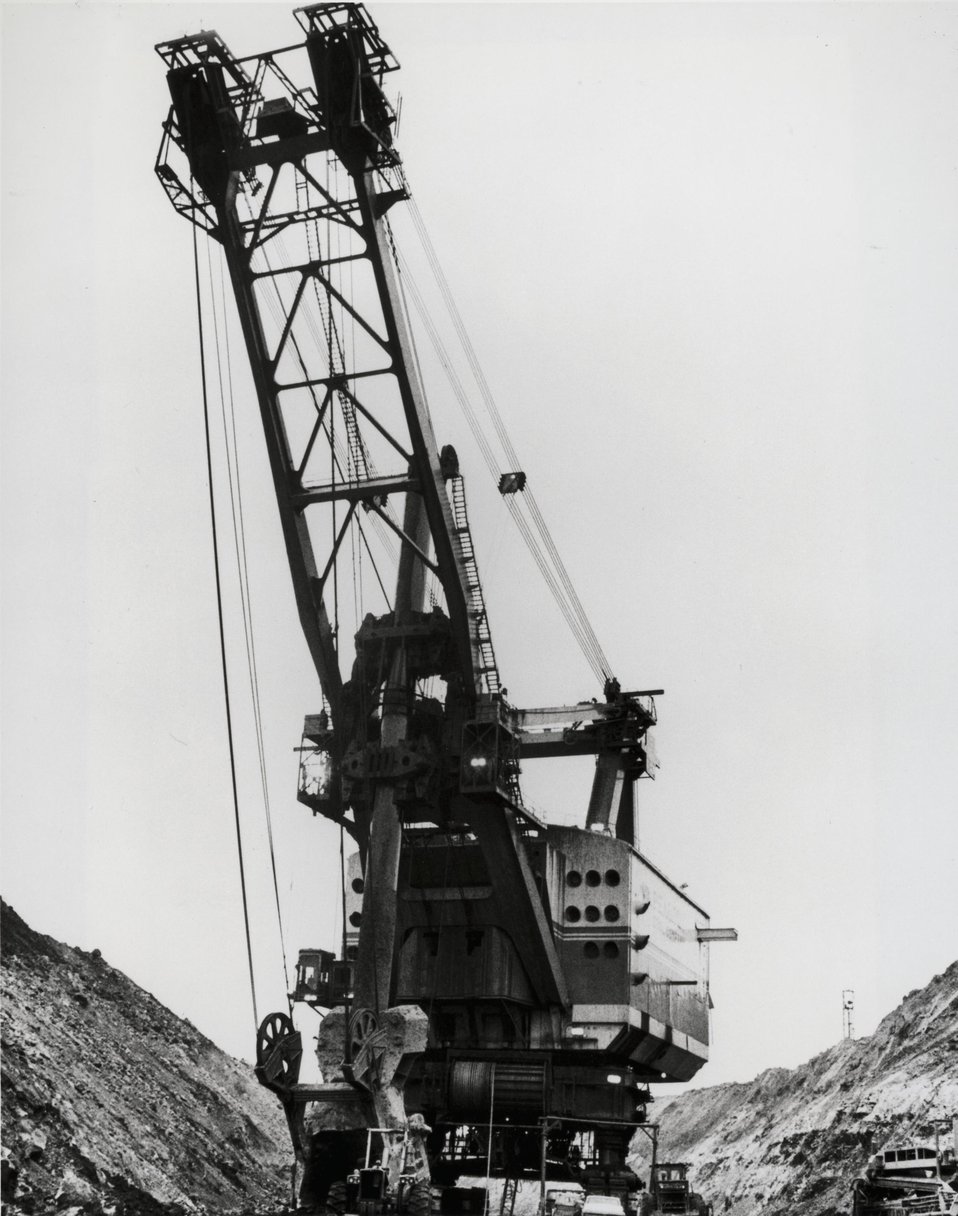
This giant shovel 20 stories high had to be assembled at the mining site. c. 1977